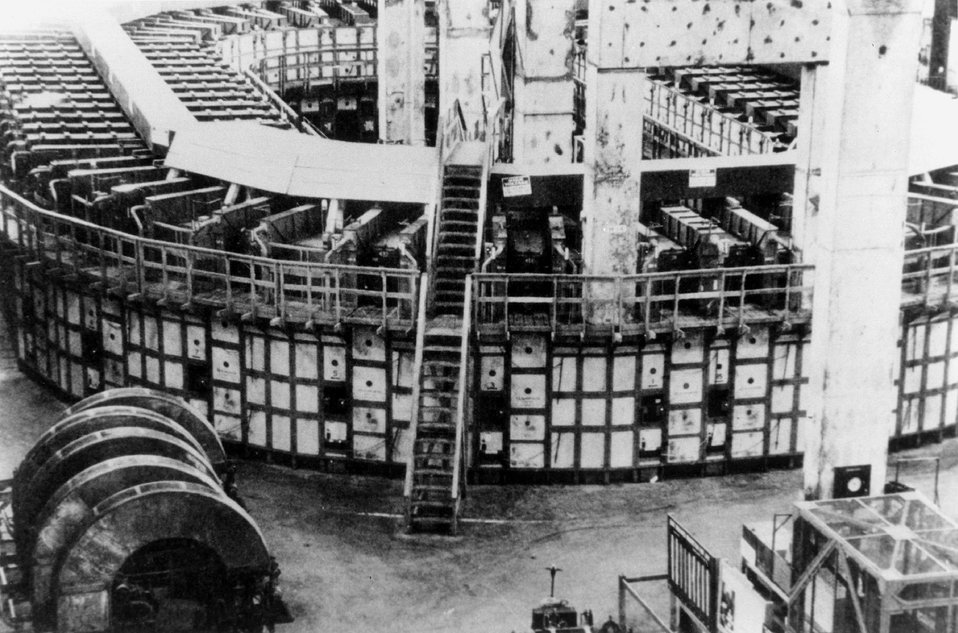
Y-12 Alpha Racetrack at Clinton. Spare magnets in left foreground. c. undated